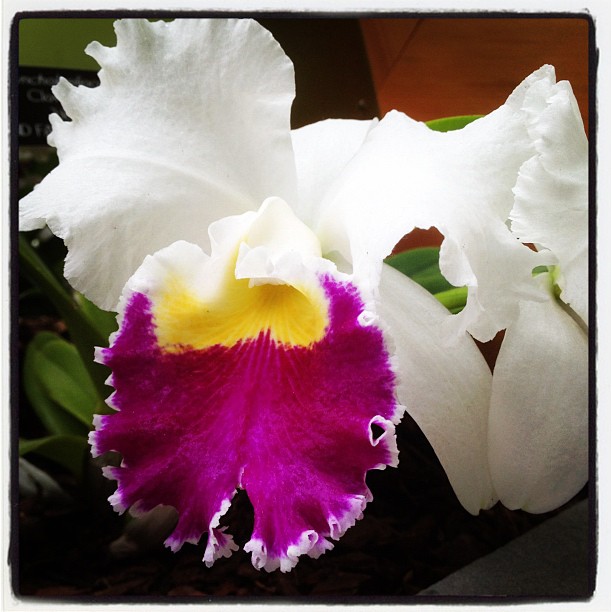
Clown Show orchid at USBG.